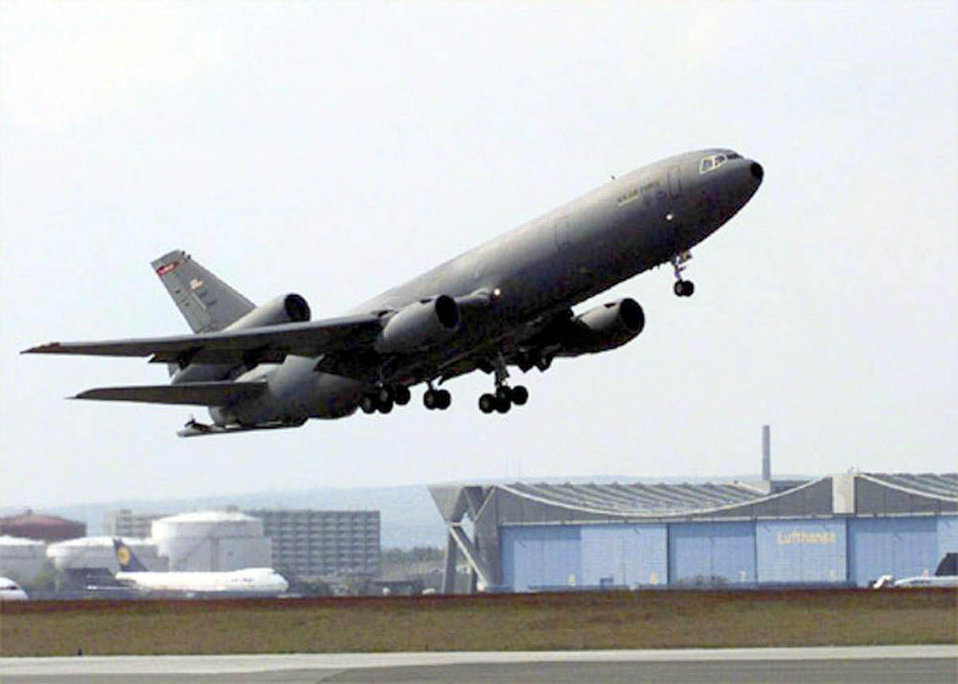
Extender lifts off

FILE PHOTO -- The KC-10A Extender is an Air Mobility Command advanced tanker and cargo aircraft designed to provide increased global mobility for U.S. armed forces.